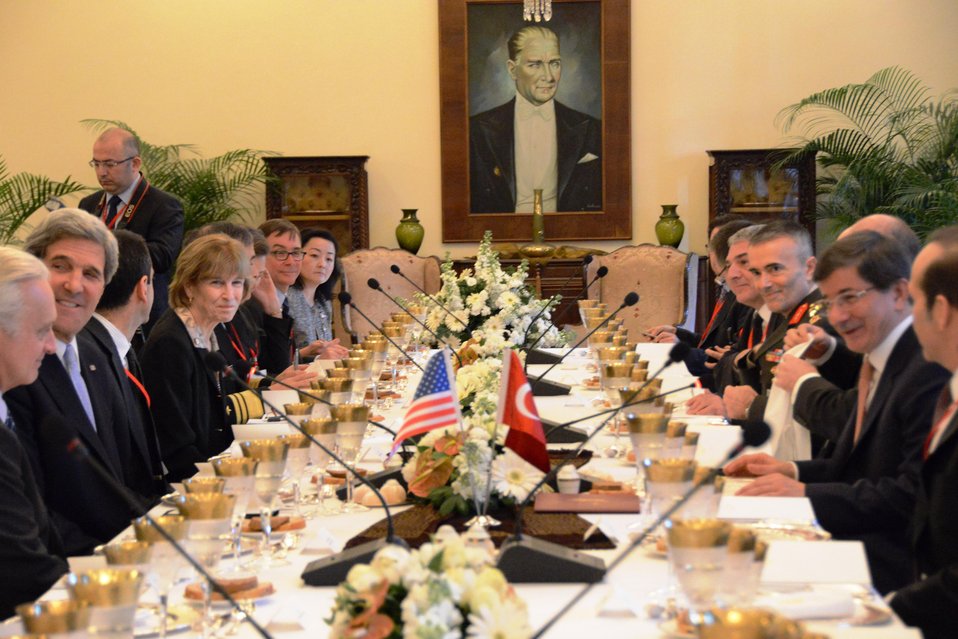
Secretary Kerry Participates in a Working Lunch With Turkish Foreign Minister Davutoglu

U.S. Secretary of State John participates in a working lunch with Turkish Foreign Minister Ahmet Davutoglu in Ankara, Turkey, on March 1, 2013.